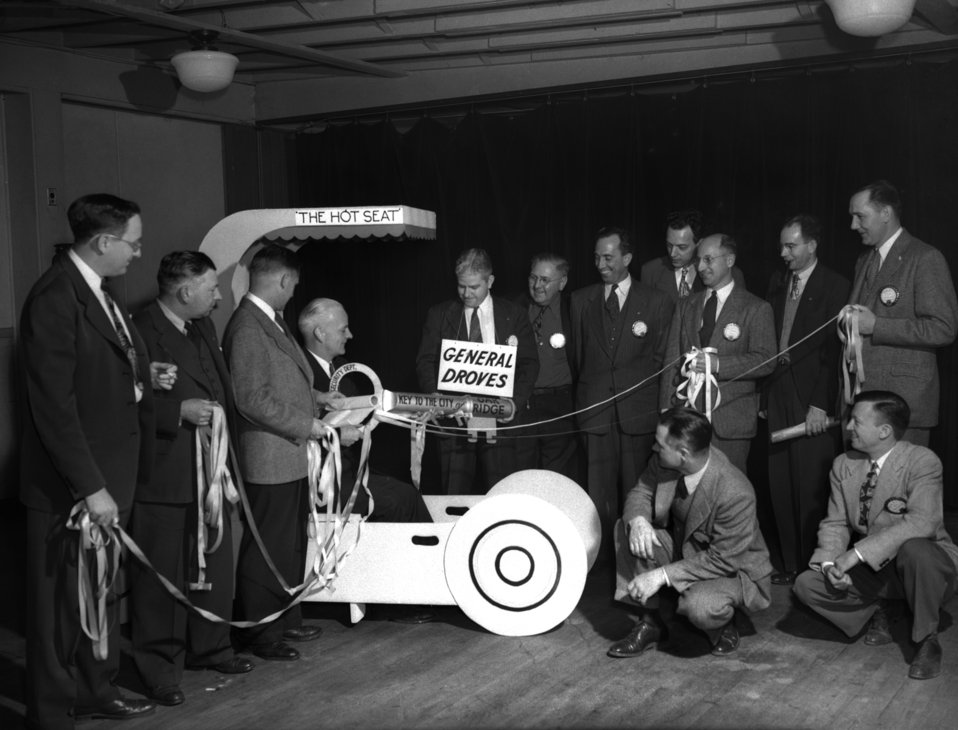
Lyons Club Oak Ridge

3336-4c DOE photo Ed Westcott 3-10-1947 Oak Ridge Tennessee